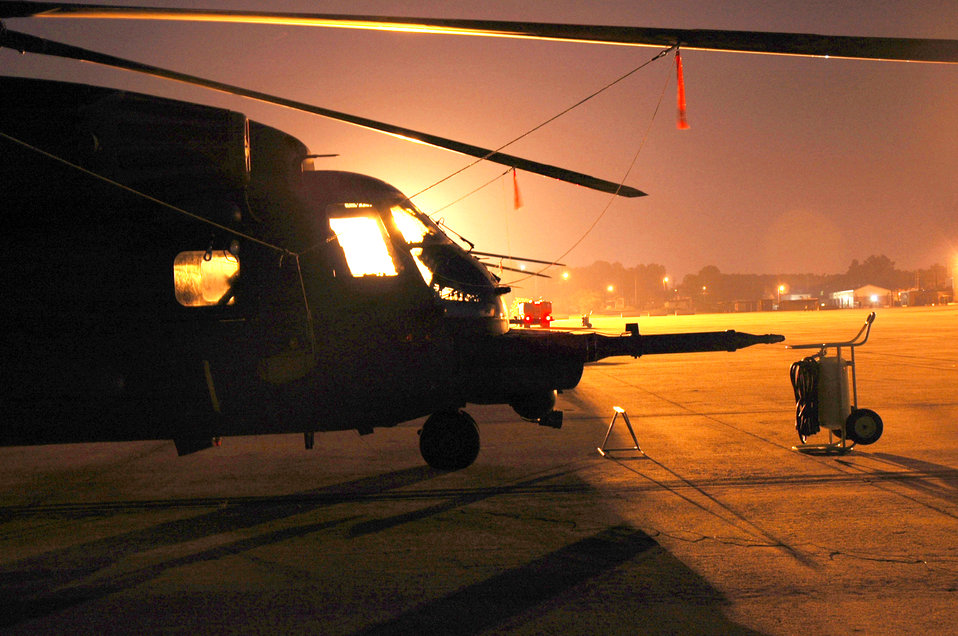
Arkansas 'paves' way for visitors

LITTLE ROCK AIR FORCE BASE, Ark. -- An MH-53M Pave Low sits on the flightline here safely away from Hurricane Dennis. The helicopter is one of many aircraft from the 16th Special Operations Wing at Hurlburt Field, Fla., that was diverted here after an evacuation for Hurricane Dennis on July 8.